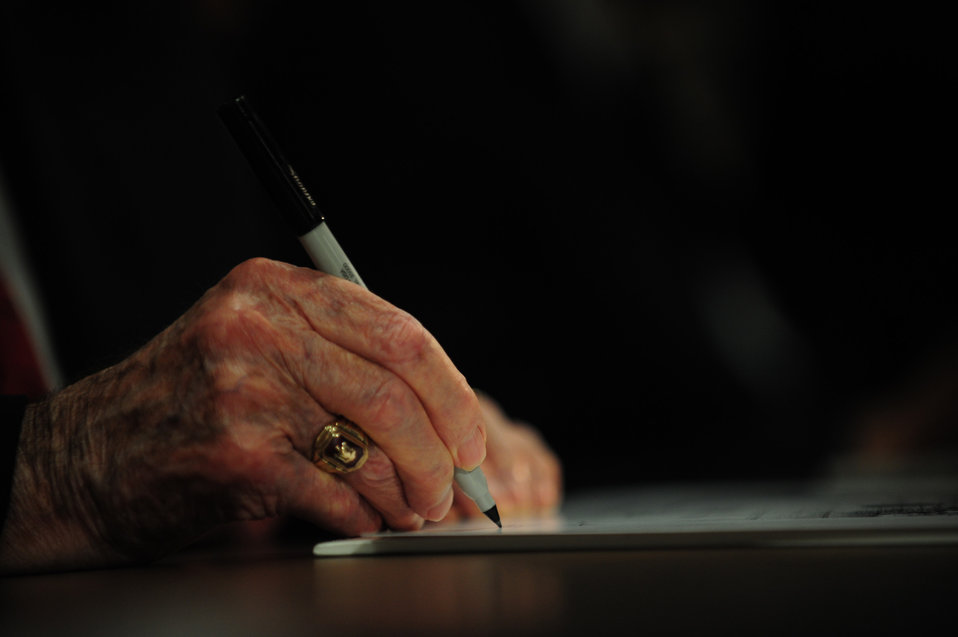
68th Doolittle Raiders Reunion

U.S. Air Force Lt. Col (ret.) Robert L. Hite, co-pilot of the sixteenth B-25 Mitchell Bomber that took part in the Doolittle Tokyo Raid, signs an autograph for a visitor at the National Museum of the U.S. Air Force at Wright Patterson Air Force Base, Ohio, April 16, 2010.